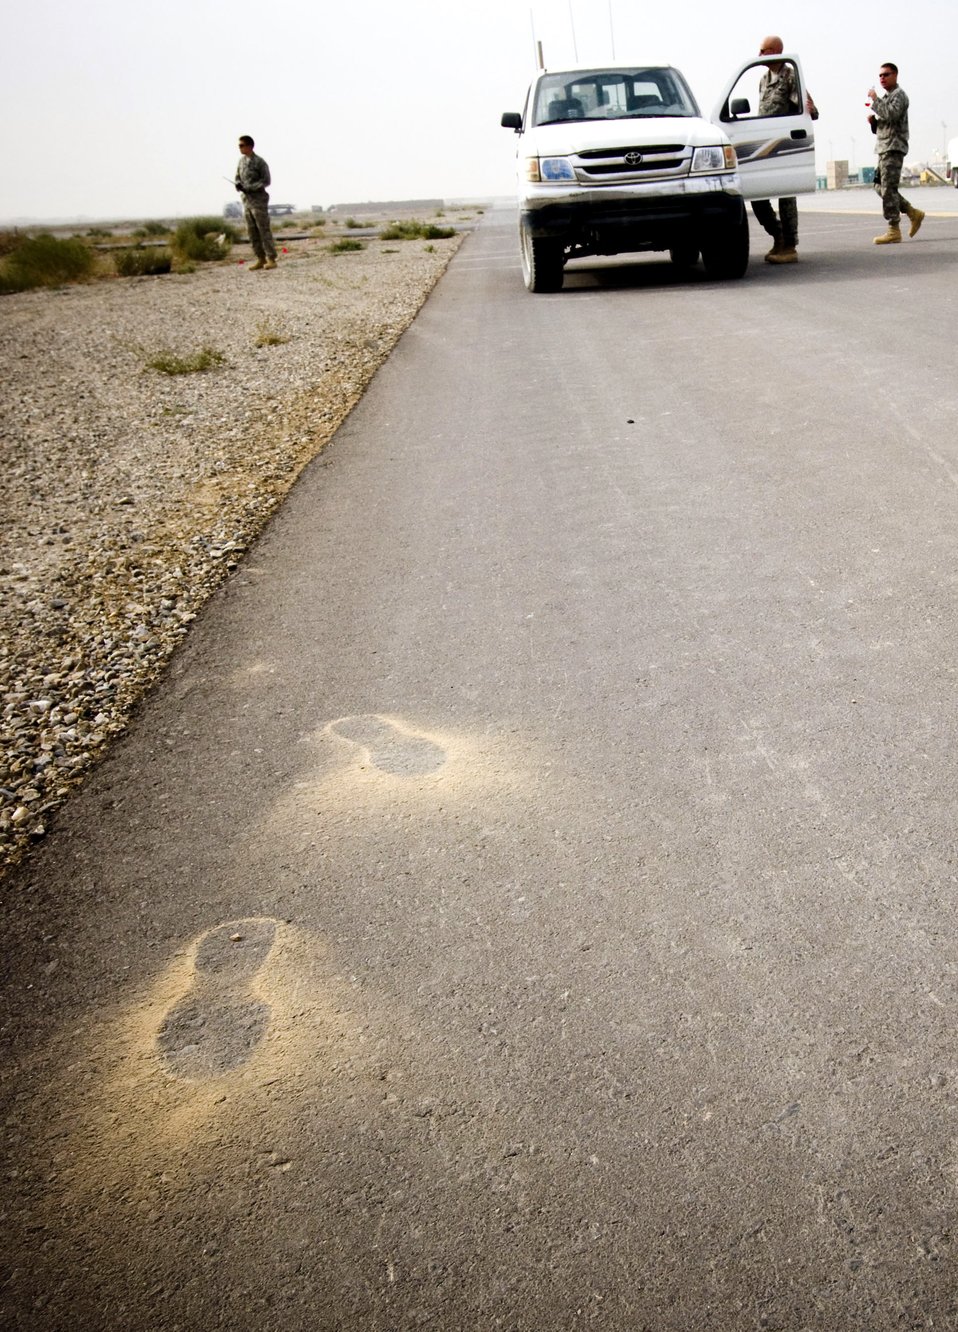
Airmen respond to buried threat in Afghanistan

Dusty footprints betray the exit of Airmen involved with the controlled burn Nov. 7 at Bagram Airfield, Afghanistan. The soft, dusty sand in Afghanistan forced the explosive ordnance disposal team to take extra care to not disturb the bomb.